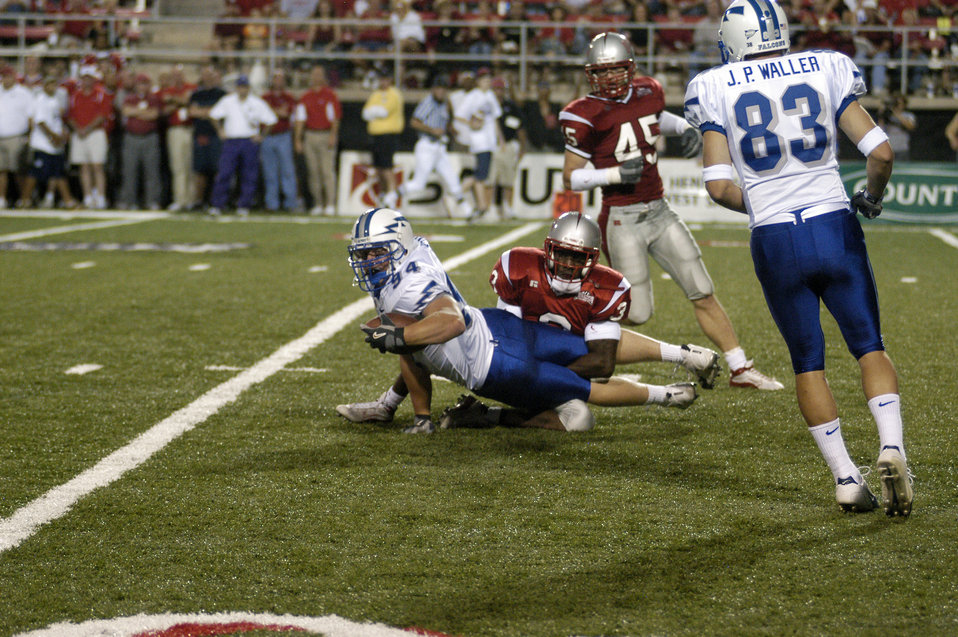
Falcons defeat UNLV, 27-10

LAS VEGAS -- Air Force Academy tight end Carsten Stahr checks to see if he made the first down after pulling in a pass in the red zone. By adding 139 yards of passing to their triple-option ground attack, the Falcons defeated University of Nevada-Las Vegas 27-10 in their Sept. 18 conference opener and advanced to 2-1. The Falcons next play No. 15 Utah on Sept. 25.